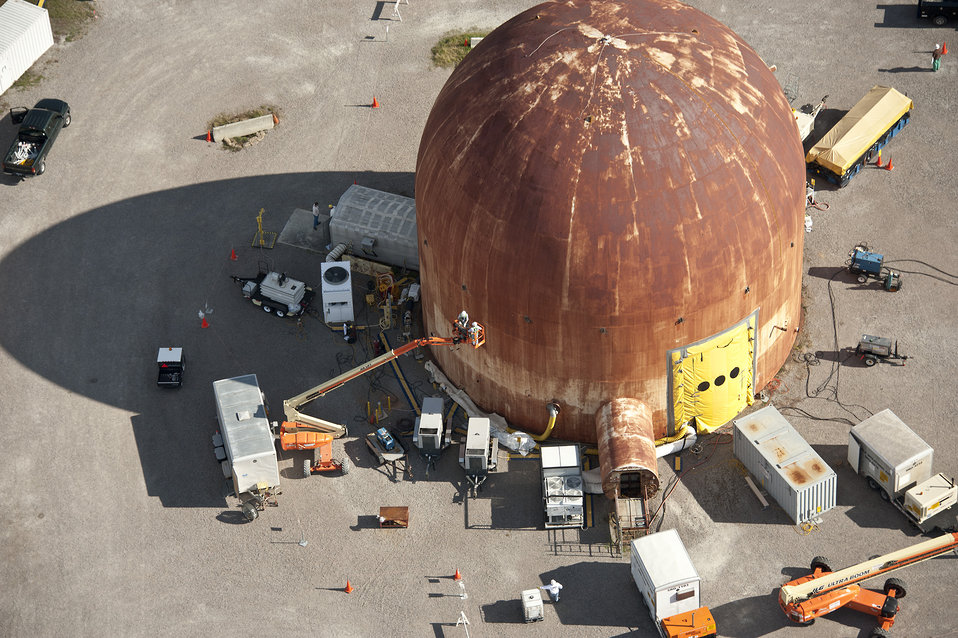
HWCTR Decommissioning

Work is under way to decommission the Heavy Water Components Test Reactor, which had been used to test experimental fuel assemblies for commercial heavy-water power reactors. SRS is scheduled to remove the dome of the reactor this month (January 2011). Workers also will displace the reactor vessel and steam generators, grout the remaining structure in place, and install a concrete cover over the reactor’s footprint.